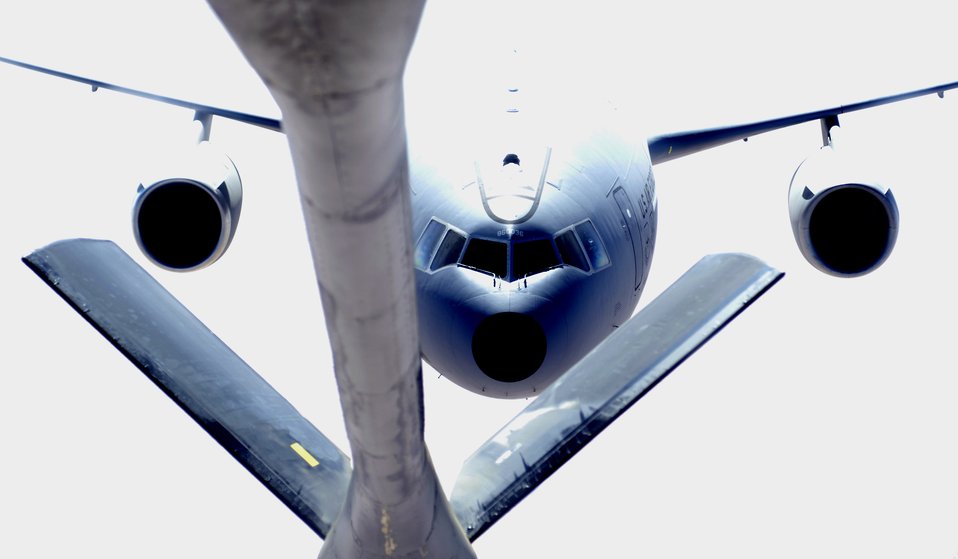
CENTAF airpower summary for March 6, 2007

A KC-135 Stratotanker refuels a KC-10 Extender March 6 while flying over Afghanistan in support of Operation Enduring Freedom. The KC-135's aerial refueling capability contributed to the International Security Assistance Force's launch of Operation Achilles. The operation aims to create an environment that will enable the government of Afghanistan to help improve security and the quality of life for Afghan people.